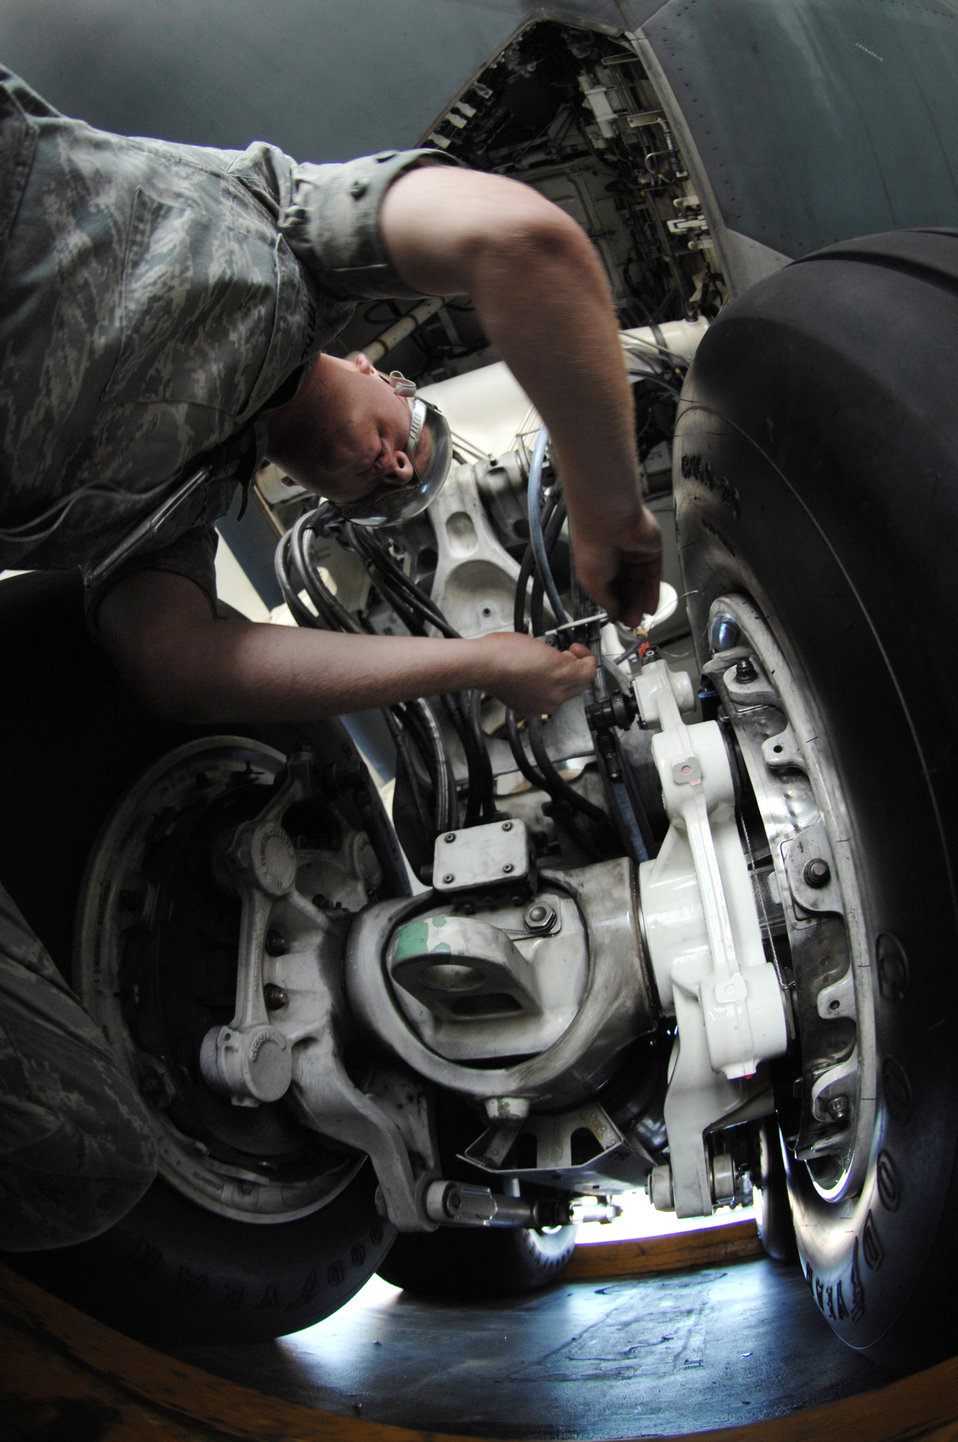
Ready for takeoff

Airman 1st Class Benjamin Feldkamp works on the brakes on a B-2 Spirit Aug. 22 at Whiteman Air Force Base, Mo. Airman Feldkamp and other 509th Aircraft Maintenance Squadron crew chiefs work around the clock to ensure the B-2 is mission ready at all times.